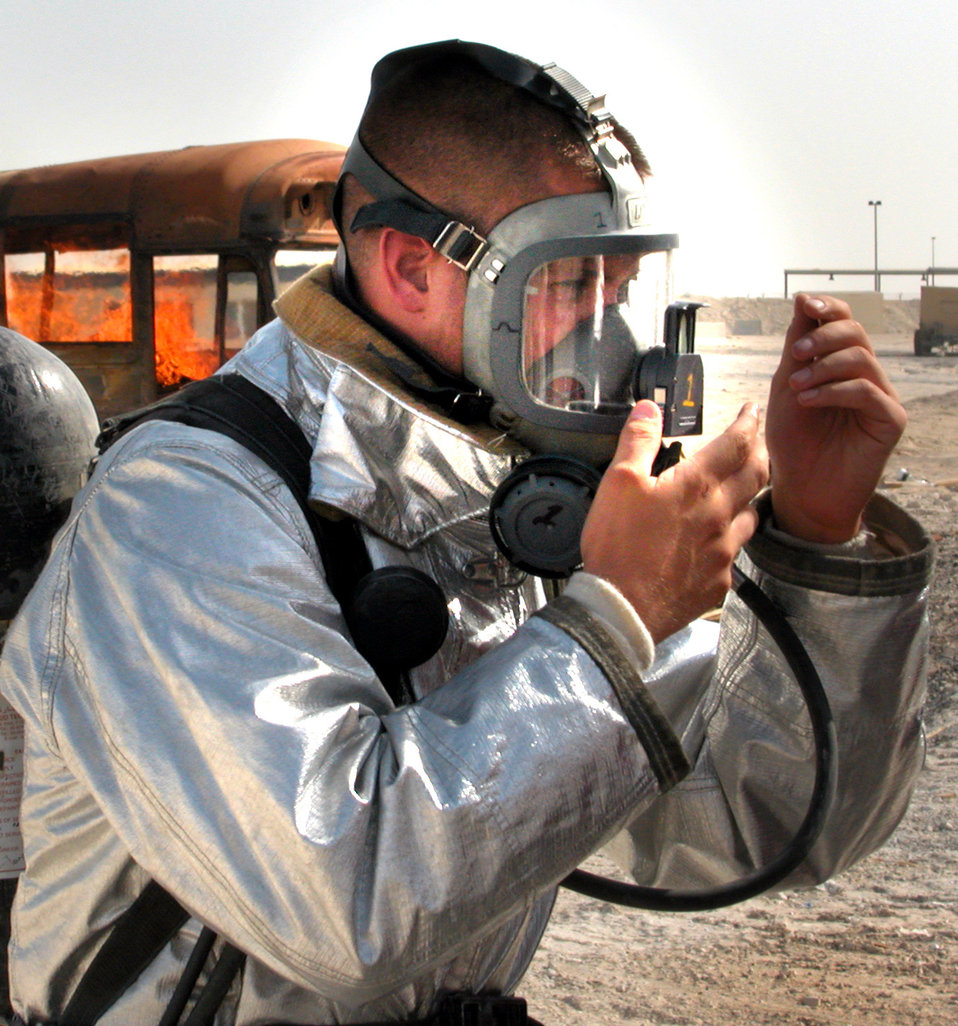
Masked man

OPERATION ENDURING FREEDOM -- Senior Airman Michael Gidich puts on a mask before extinguishing a training fire at a forward-deployed location in Southwest Asia. Gidich is a firefighter from the 910th Civil Engineer Squadron at Youngstown Air Reserve Station, Ohio. He is deployed to the 380th Expeditionary Civil Engineer Squadron.